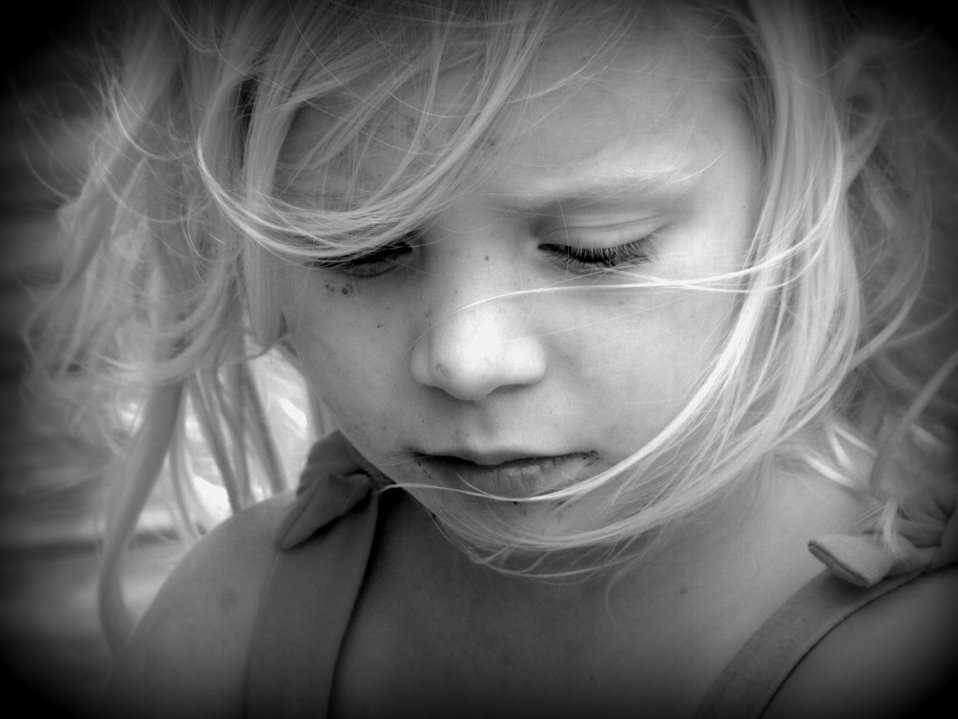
Olyvia

Girl portrait.